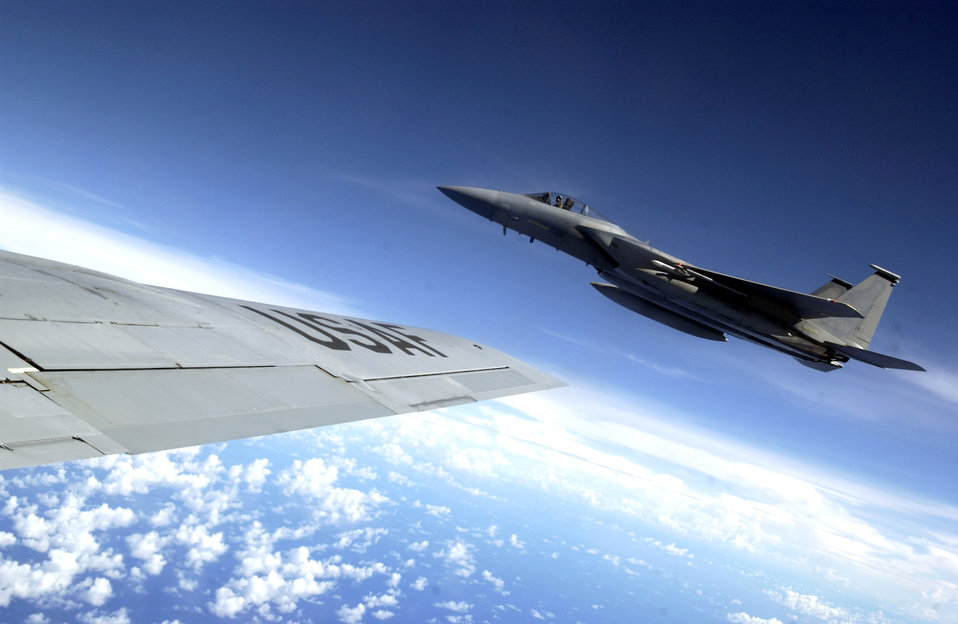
Valiant Shield gas station

An F-15 Eagle flies alongside a KC-135 Stratotanker during Exercise Valiant Shield Aug. 9 at Andersen Air Force Base, Guam. The F-15 is from the 44th Fighter Squadron at Kadena Air Base, Japan, and the KC-135 is from the New Hampshire Air National Guard. During the exercise, Air Force aircraft and Airmen from stateside bases and Kadena AB will comprise part of an expeditionary air wing based at Andersen AFB. These forces will participate in integrated joint training with Navy and Coast Guard forces.